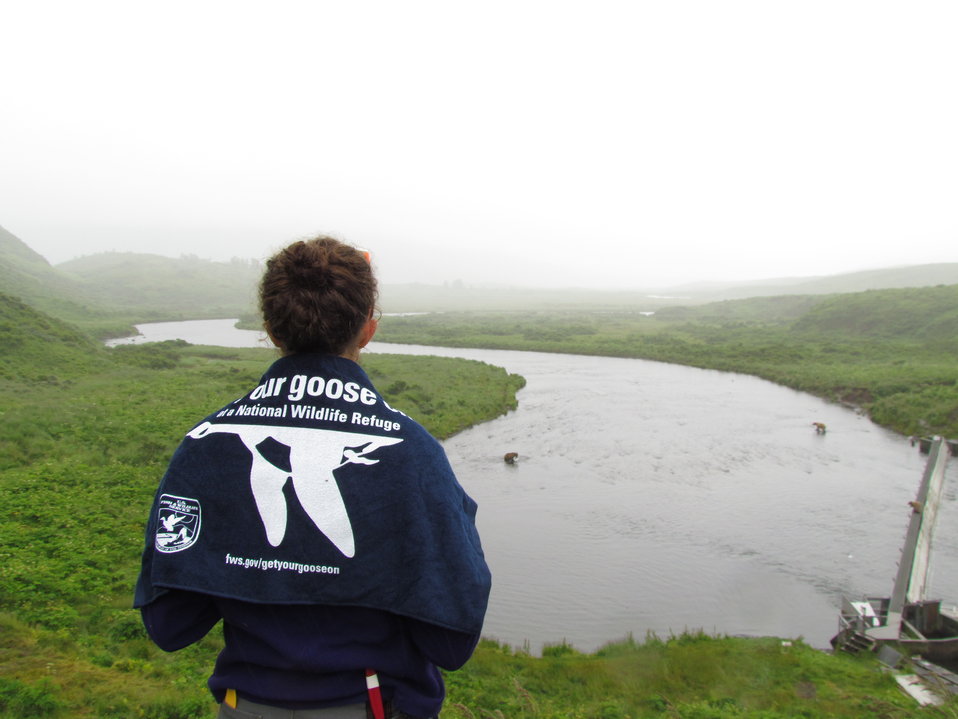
Get Your Goose On! - Alaska Style

YCC crew member, Iris Blakeslee, with Kodiak Brown Bears in the background.

Credit: Shelly Lawson / USFWS

The Kodiak National Wildlife Refuge is a United States National Wildlife Refuge in the Kodiak Archipelago in southwestern Alaska, United States.

The Kodiak National Wildlife Refuge includes the southwestern two-thirds of Kodiak Island, Uganik Island, the Red Peaks area of Afognak Island and all of Ban Island in the archipelago. It encompasses 1,990,418 acres (8,054.94 km2).[2] The refuge is administered from offices in Kodiak.

The refuge contains seven major rivers and about 100 streams. It is a spawning ground for all six species of Pacific Ocean salmon, trout and several other fish species, as well as a nesting ground for 250 species of bird, many of which feed on salmon. The refuge has only six native species of mammals: Kodiak brown bear, red fox, river otter, ermine, little brown bat and tundra vole. The non-native mammals Sitka deer, mountain goat, Roosevelt elk, snowshoe hare and beaver were introduced to the archipelago between the 1920s and 1950s and are now hunted and trapped.

The climate of the refuge is that of southern Alaska, mild and rainy. Many areas in the refuge are densely forested with Sitka Spruce at lower elevations. There are grasslands in drier areas and at higher elevations. The refuge contains several small glaciers.